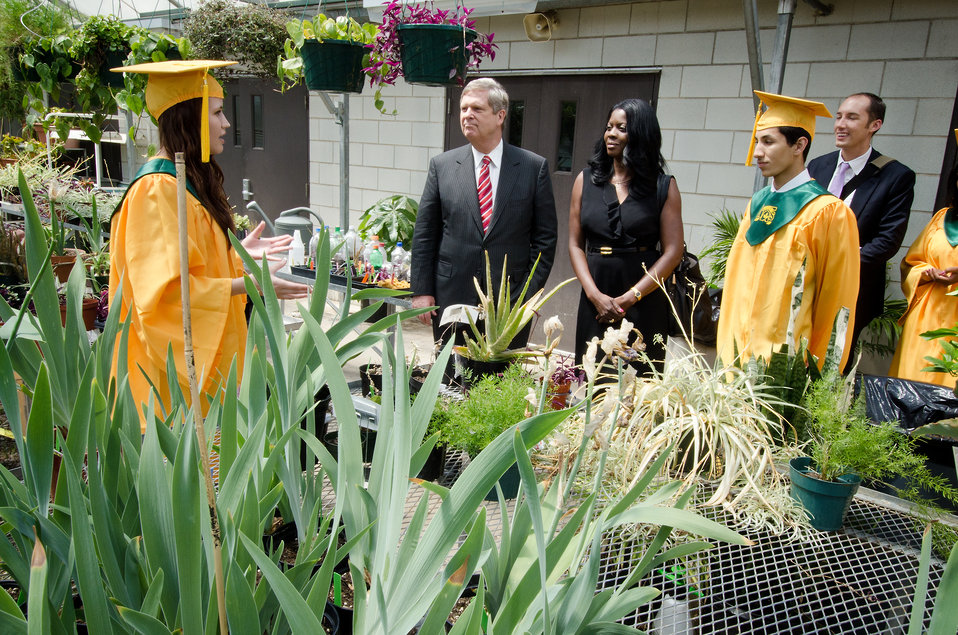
From left: Jennifer Nelson, Salutatorian, Agriculture Secretary Tom Vilsack, Dr. Chavonda Jacobs-Young, Associate Administrator, Agriculture Research Services and Mammoud Shalabi. Students of the Chicago High School of Agricultural Science took Secretary Vilsack and Dr. Jacobs-Young on a tour of the school before Secretary Vilsack gave the commencement address and Dr. Jacobs delivered the closing remarks to the 20102 graduating class of the Chicago High School for Agricultural Sciences in Chicago, Illinois on Friday, June 8, 2012.